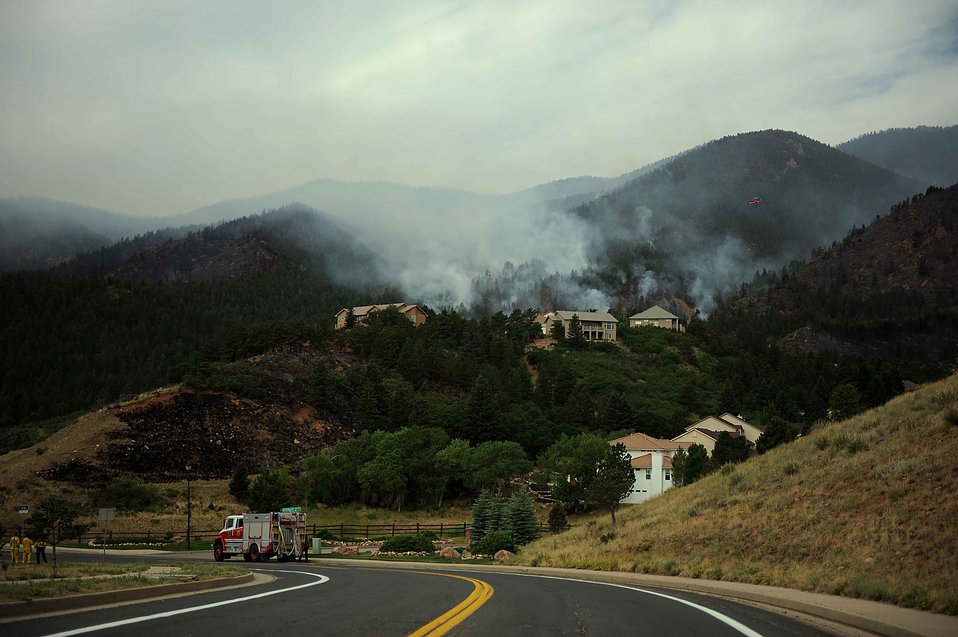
Battle continues

Fire still burns in the Mount Saint Francois area of Colorado Springs, Colo., while firefighters continue to battle several fires in Waldo Canyon on June 28, 2012. Currently, more than 90 firefighters from the Academy, along with assets from Air Force Space Command; F.E. Warren Air Force Base, Wyo.; Fort Carson, Colo.; and the local community continue to fight the Waldo Canyon fire.